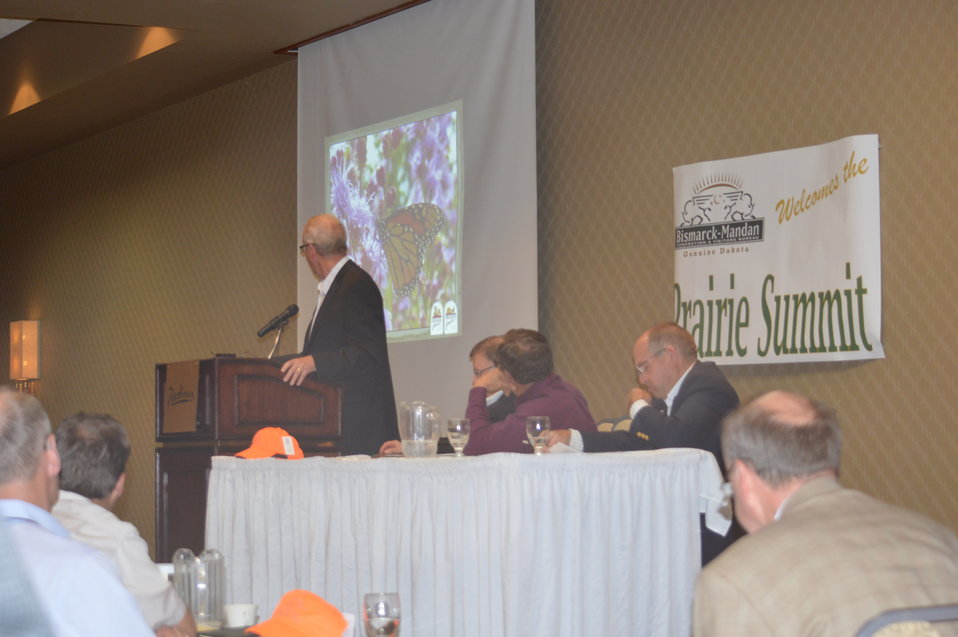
Dave Nomsen presenting at the Prairie Summit

Through the efforts of Ducks Unlimited and its partners, a Prairie Summit meeting was held in June 2013 in Bismarck, North Dakota, bringing key stakeholders to the table to identify and begin to address the immediate needs of the overall effort to conserve wetlands and grasslands, as well as bring media attention to the issues at hand and the urgency of the situation.